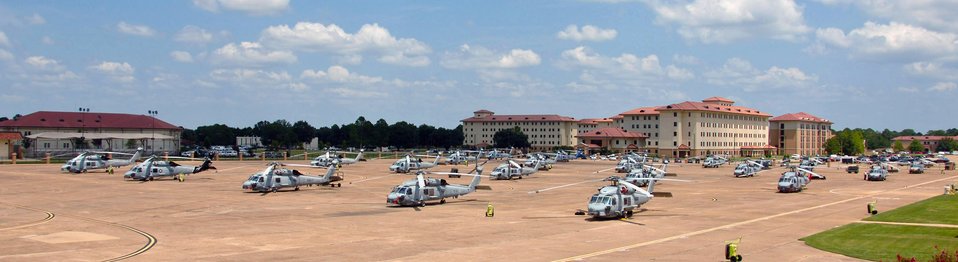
Maxwell shelters Navy Seahawks from Tropical Storm Fay

SH-60B Seahawks line up Aug. 20 at Maxwell Air Force Base, Ala. Based at Naval Station Mayport in Jacksonville, Fla., nearly three dozen Seahawks and 157 personnel flew to Maxwell AFB for shelter from Tropical Storm Fay.